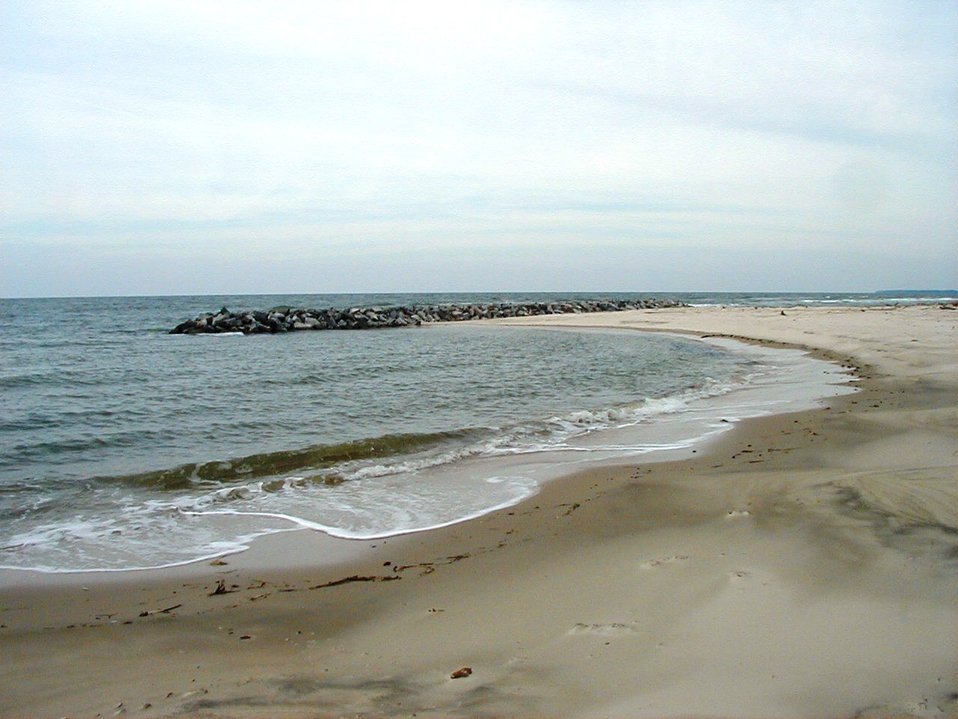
Offshore breakwater system

The system would help guard the shoreline against hurricanes and other storms. It would restore a functioning beach community, increase habitat for the tiger beetle, and insure that the site will continue to support the beetle while helping property owners reduce property loss risk.